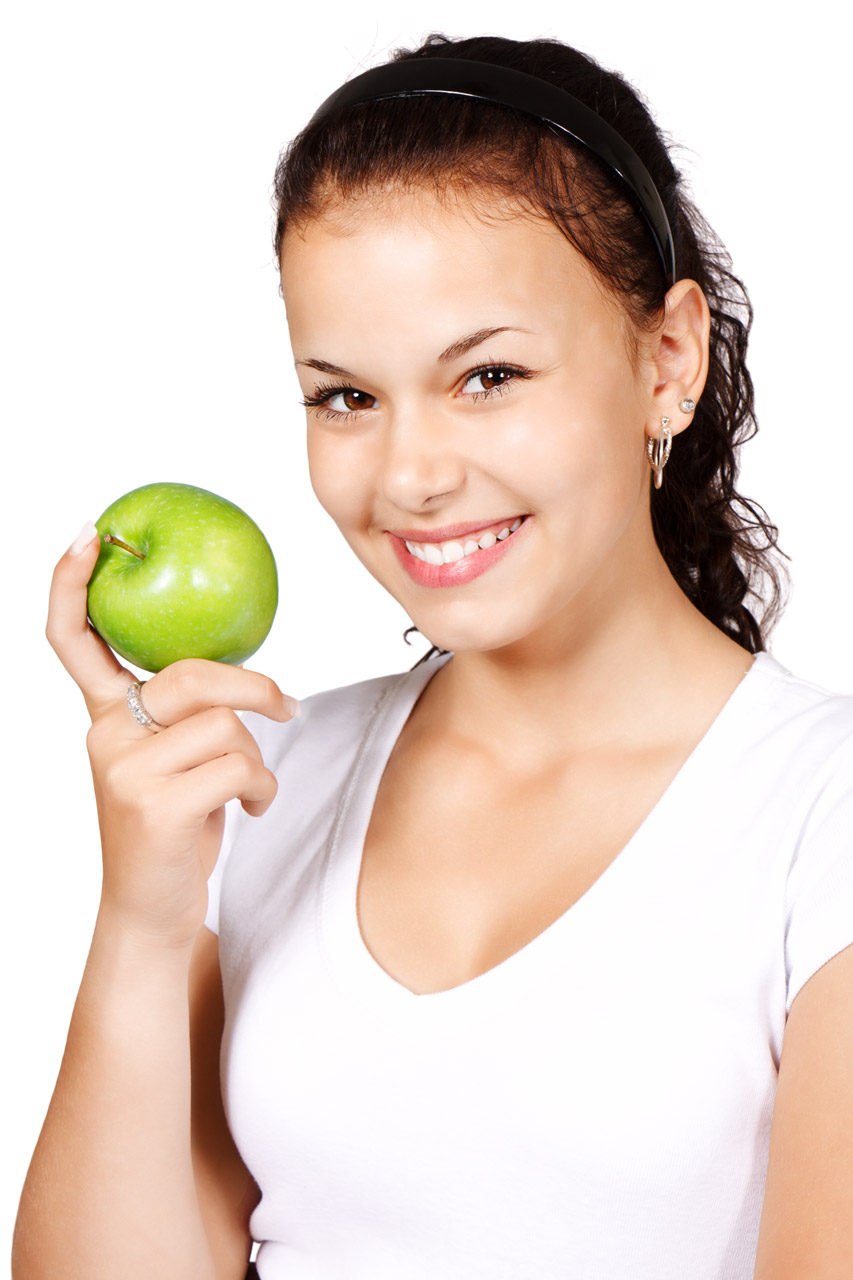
Healthy lifestyle

Young woman smiling and holding green apple isolated on white background.